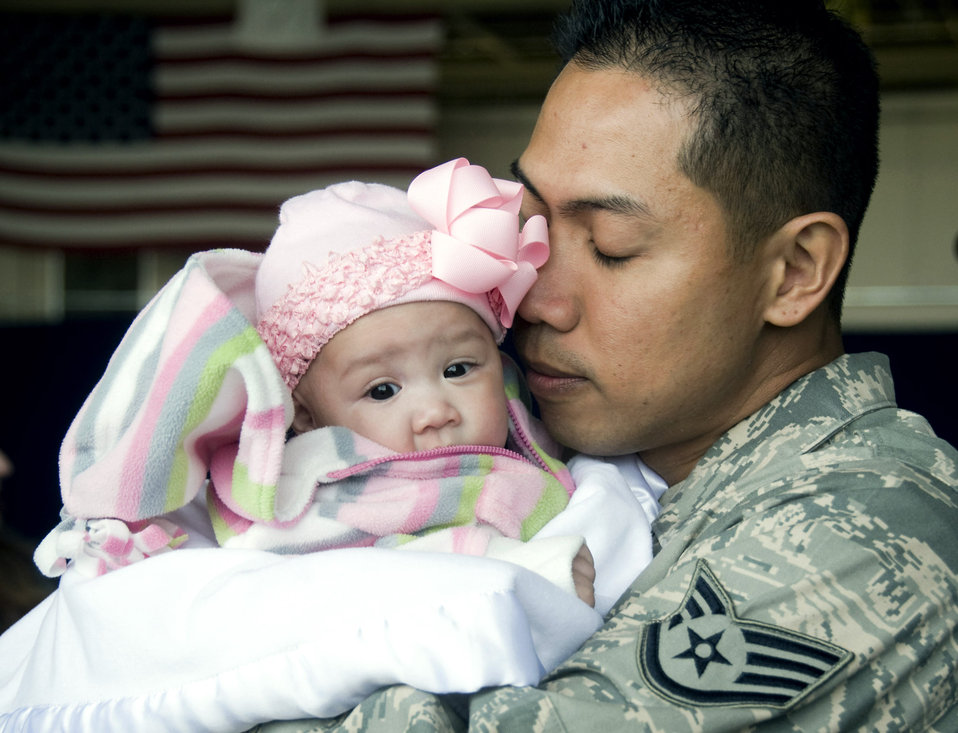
I'm home

After returning home March 1 to Misawa Air Base, Japan, Staff Sgt. Dennis Horlador embraces his newborn, Natyala. Sergeant Horlador missed the birth of his daughter while deployed to Joint Base Balad, Iraq, from the 35th Operations Group here.